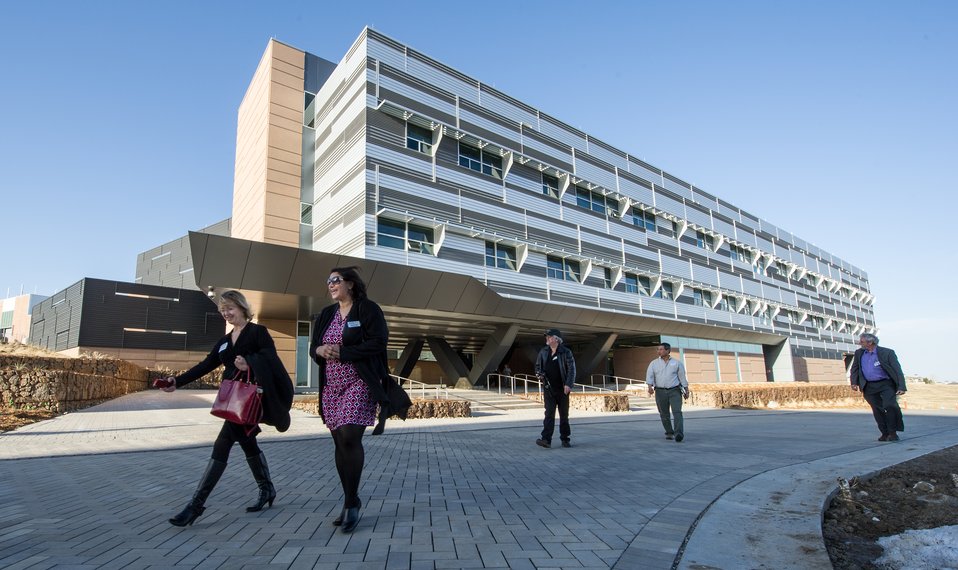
Energy Executives, Alumni

March 7, 2013 - Members of the Energy Executive Energy Leadership Program, tour the ESIF during an Alumni Refresher Course at the National Renewable Energy Laboratory.